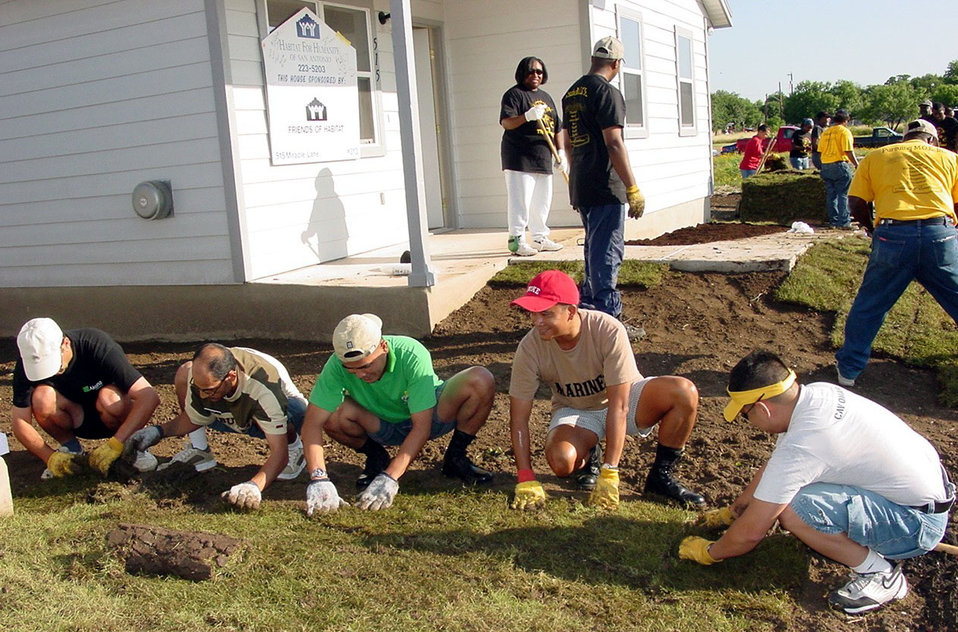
Building for humanity

LACKLAND AIR FORCE BASE, Texas -- International military students from the Defense Language Institute English Language Center here put the finishing touches on a Habitat for Humanity house construction project by laying sod.